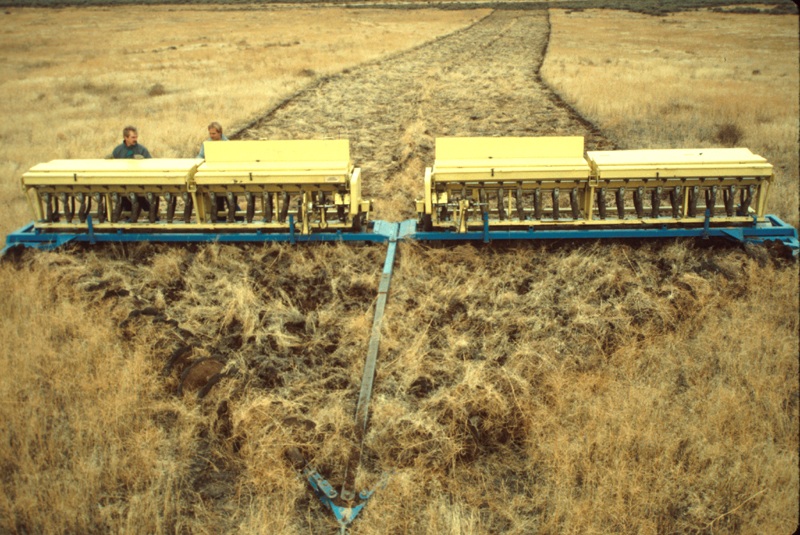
Range Restoration Project Lower Snake River District